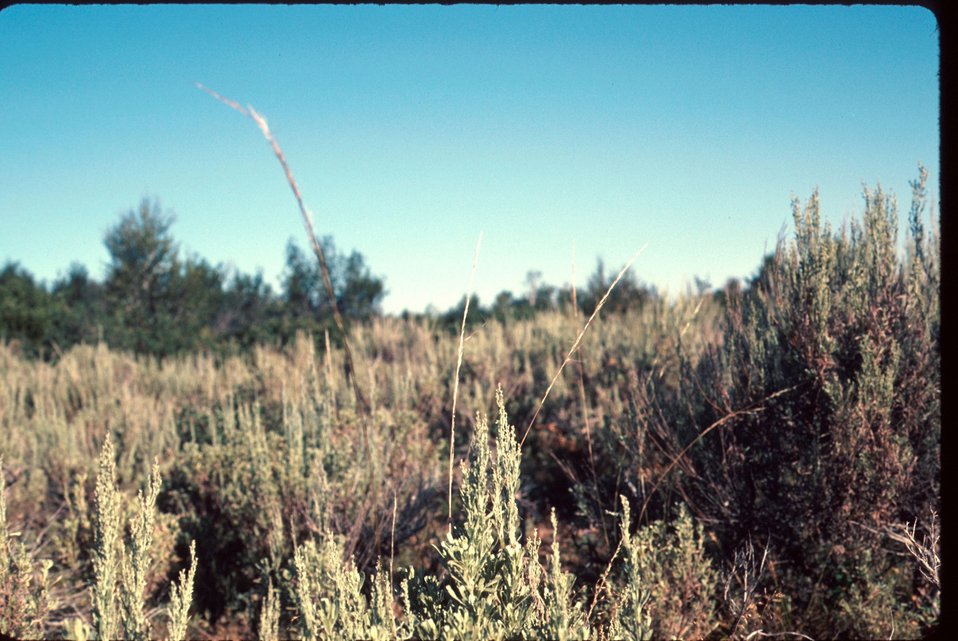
Stipa columbiana site columbia needle grass